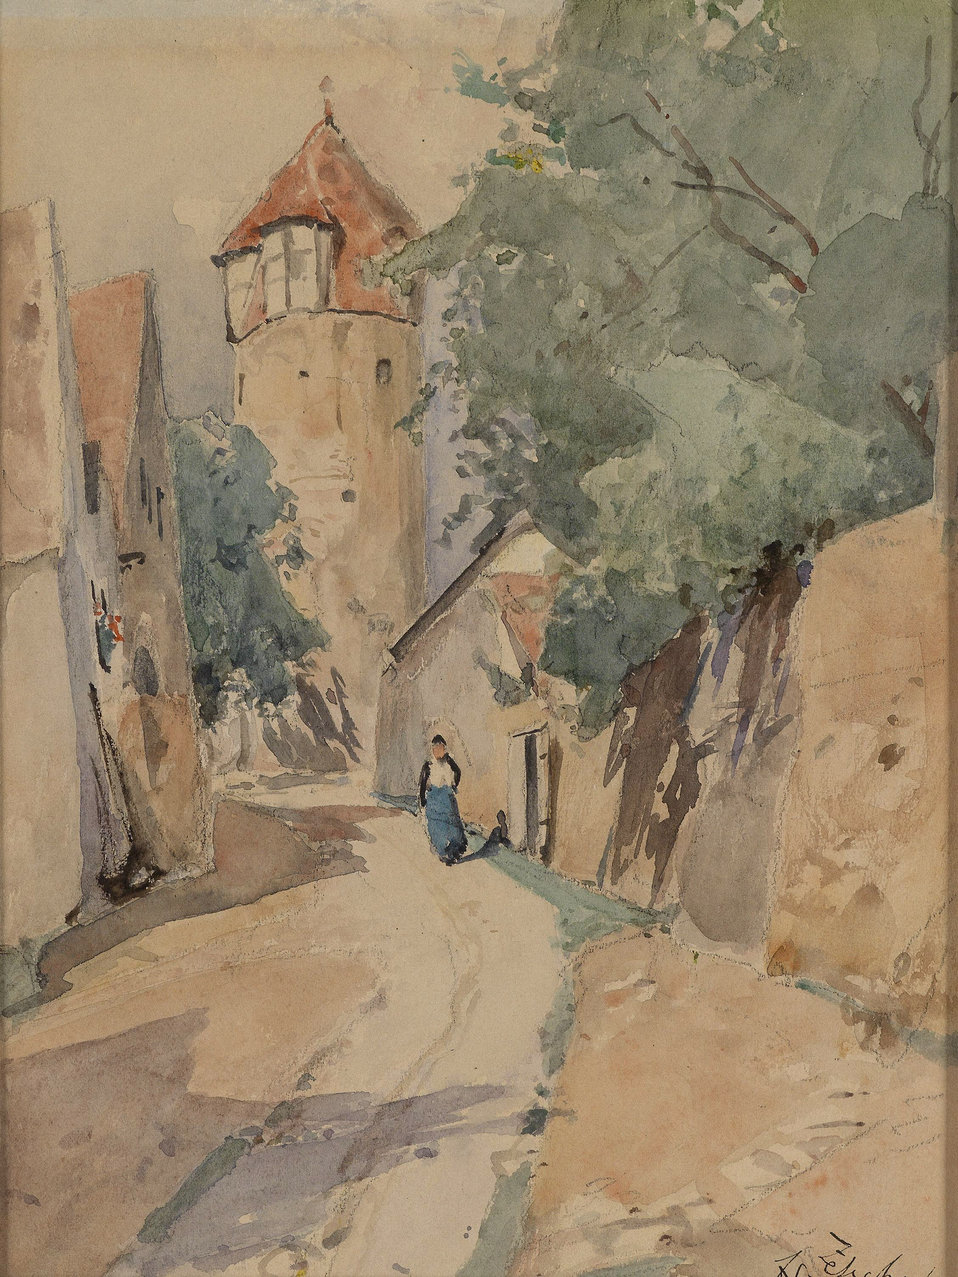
'Sulzbach', verso betitelt, signiert und datiert ed. Zetsche (1)917, Aquarell auf Papier, 22 x 17 cm